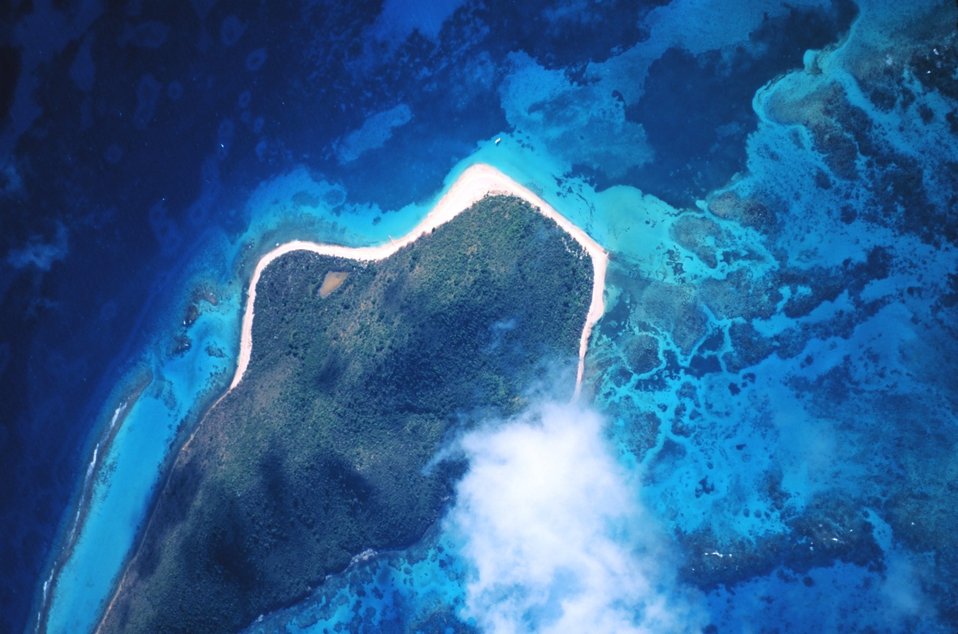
Buck Island Reef National Monument - a jewel in a tropical sea.